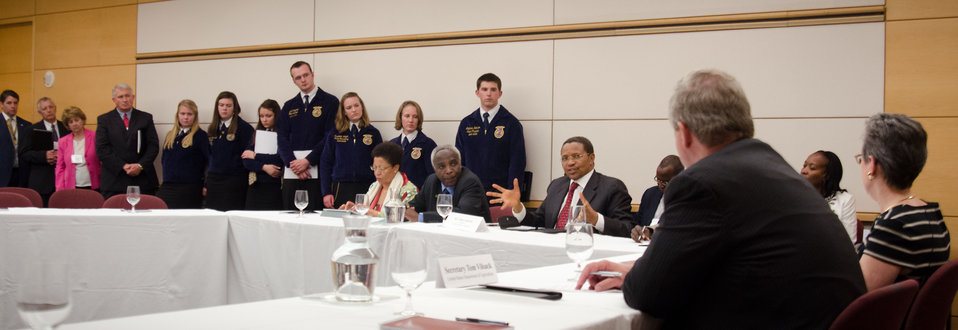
President of the United Republic of Tanzania His Excellency Jakaya Kikwete makes remarks at the African Heads of State conference at the Ronald Reagan Federal Building in Washington, D.C., on Friday, May 18, 2012.